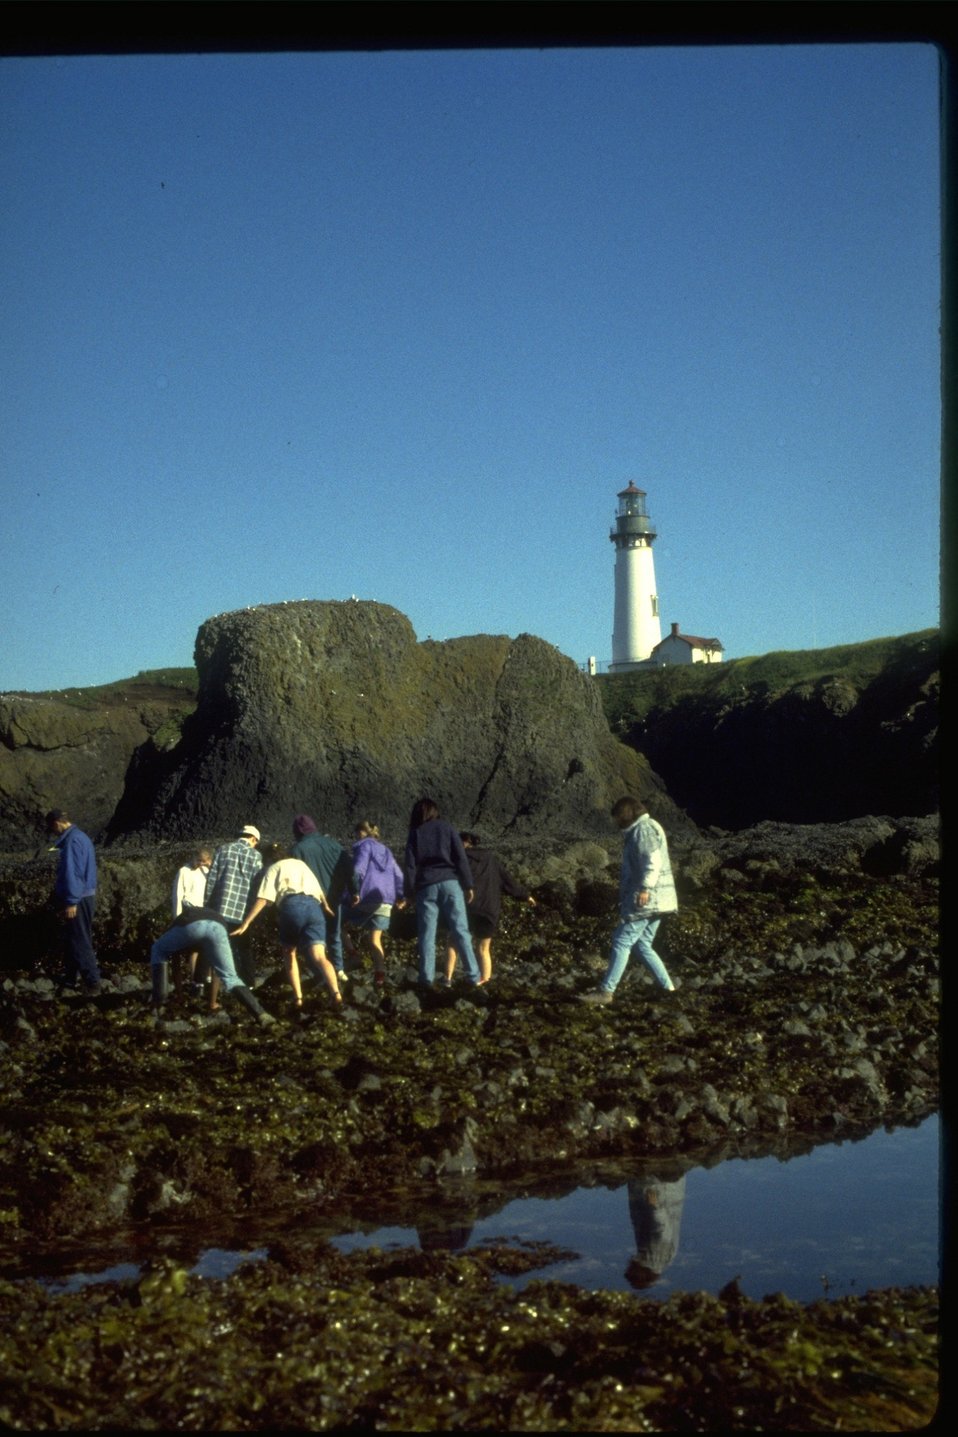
Tidepooling at Cobble Beach at the Yaquina Head Outstanding Natural Area.